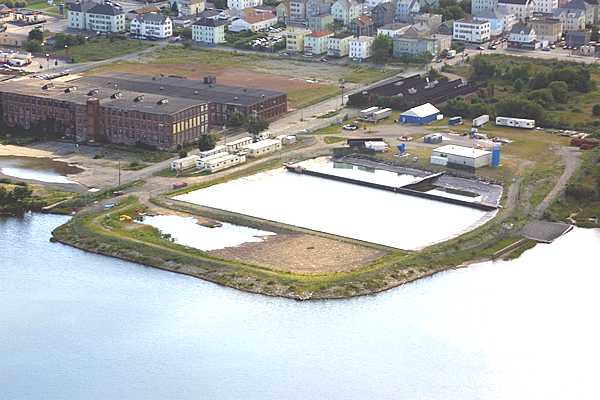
End of Sawyer Street, New Bedford, Mass.

Today, the mills to the left in this photo have been demolished and in their place stands a Market Basket grocery center. The area to the right is used to house the de-sanding facility, project offices, cleanup equipment and stock-piled sandy material awaiting disposal.